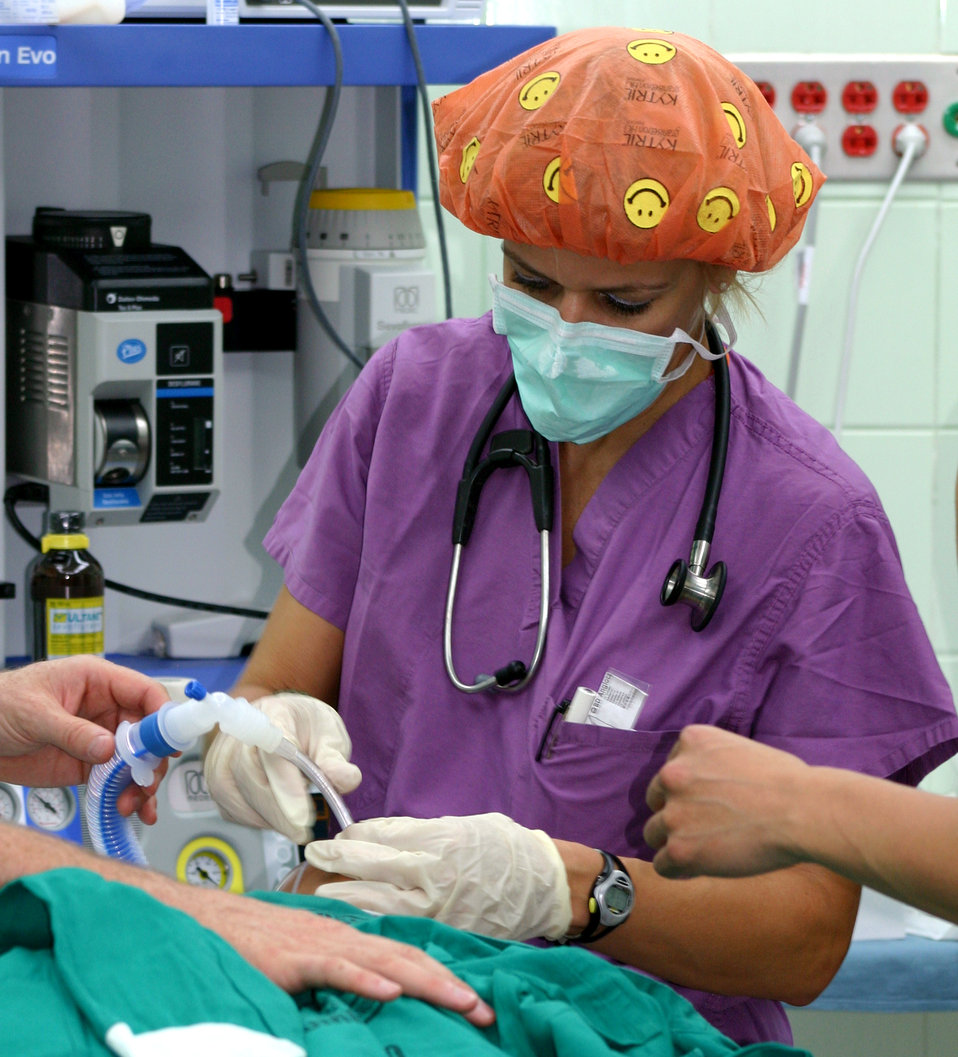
Medical team conducts mission in Ecuador

Maj. Flavia Casassola assists with an intubation procedure at a naval hospital in Esmereldas, Ecuador, as part of a Medical Readiness Training Exercise. The team focused on cleft lip and cleft palate patients and congenital and acquired malformations, such as burn victims. The major is the Wilford Hall Medical Center Surgery Center Flight commander and a nurse anesthetist.